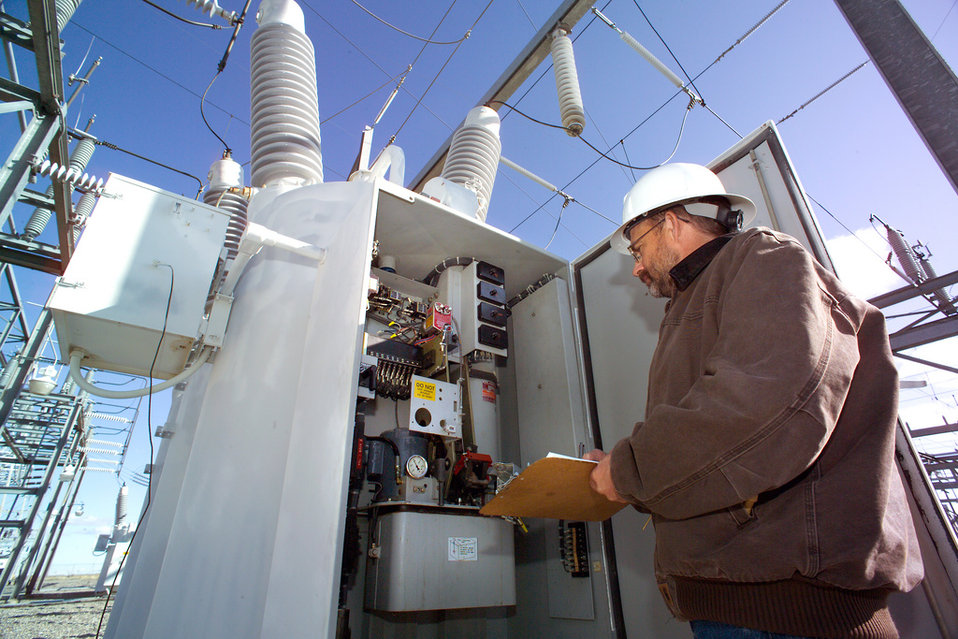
An Idaho National Laboratory power engineer examines breaker settings inside the yard of an electric substation.